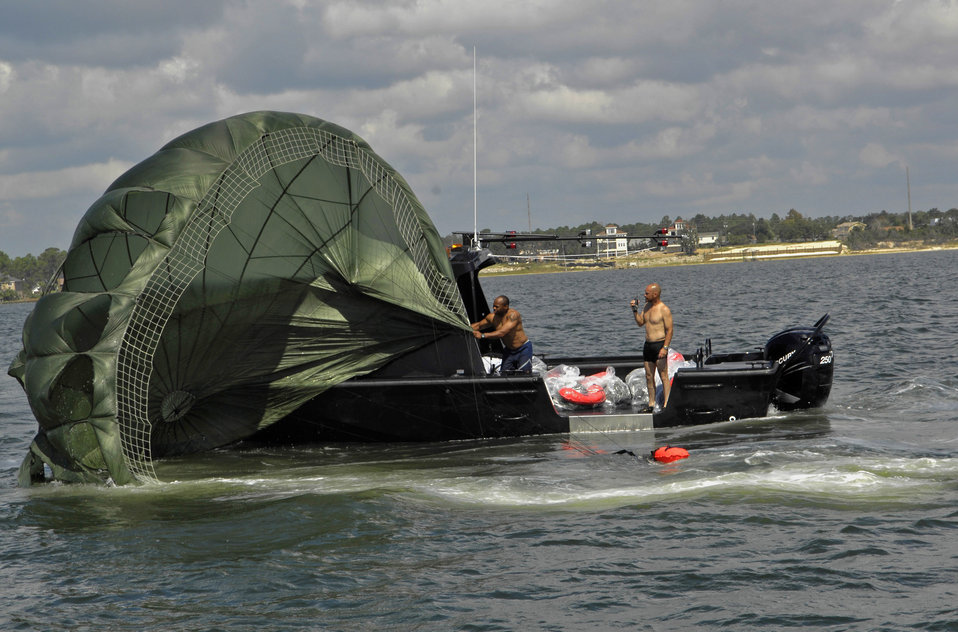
A successful jump

Instructors from the 720th Special Tactics Group at Hurlburt Field, Fla., pull in parachutes Oct. 4 after students successfully accomplished a static jump. The members of the 720 STG teach advanced skills to make the students combat ready.